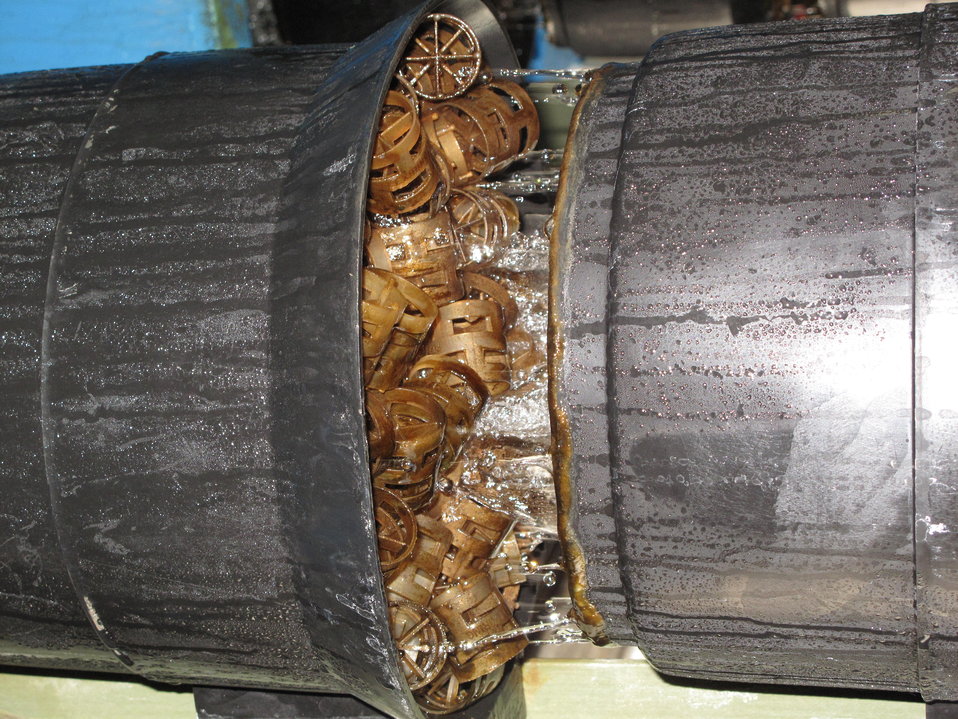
Leadville National Fish Hatchery

The filtration system is called an open-packed column.